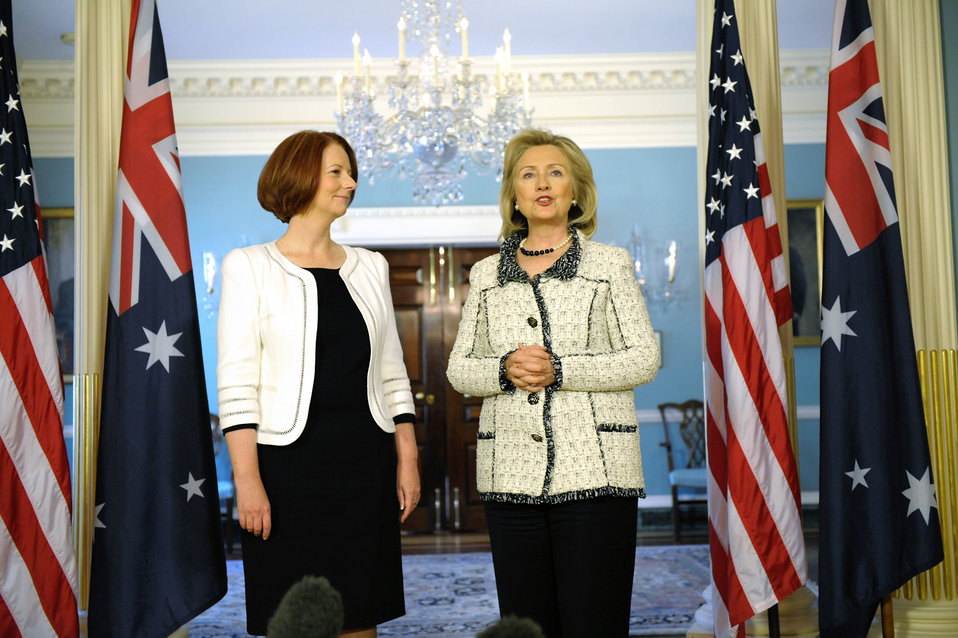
Secretary Clinton Speaks With Australian Prime Minister Gillard

U.S. Secretary of State Hillary Rodham Clinton speaks with Australian Prime Minister Julia Gillard after their bilateral meeting at the U.S. Department of State in Washington, D.C., on March 8, 2011.